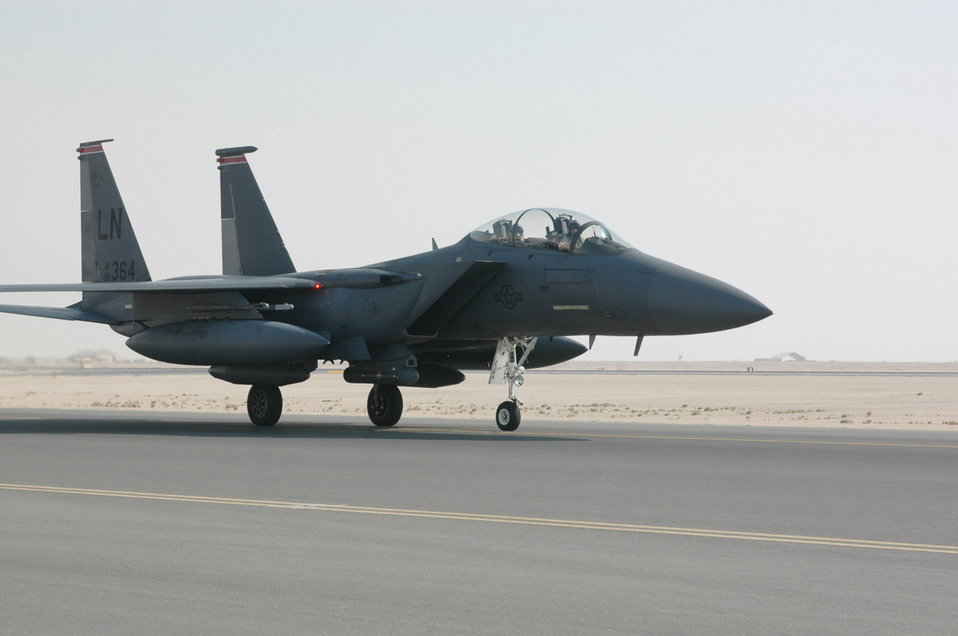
July 6 Airpower Summary

An F-15E Strike Eagle taxis for another combat mission over the skies of Southwest Asia. Strike Eagles used guided bomb unit-12s, GBU-38, GBU-39s and cannon rounds to counter anti-coalition forces July 6.